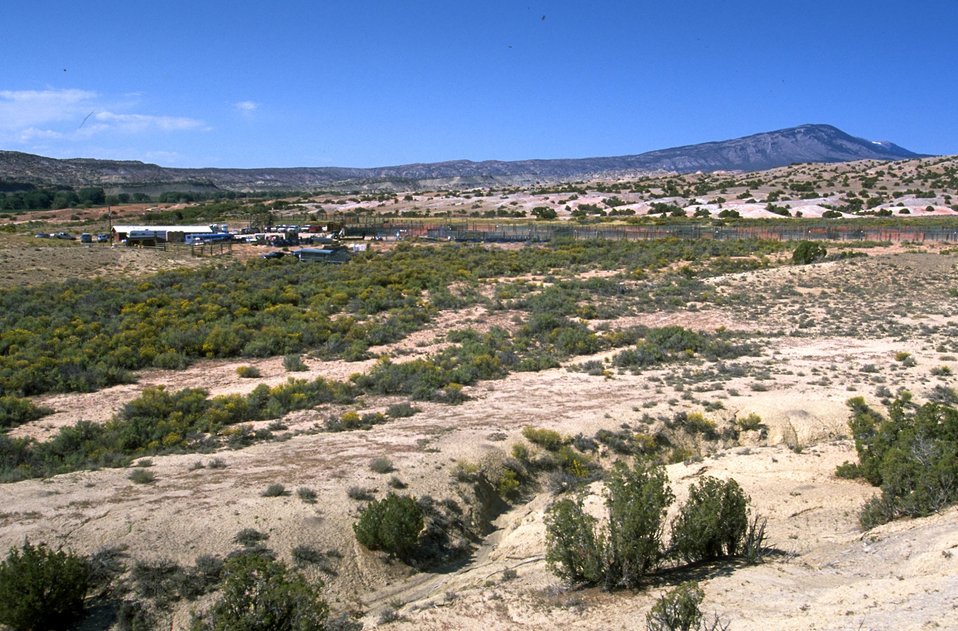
Administrative building and holding corrals at Britton Spring in the Pryor Mountain National Wild Horse Range